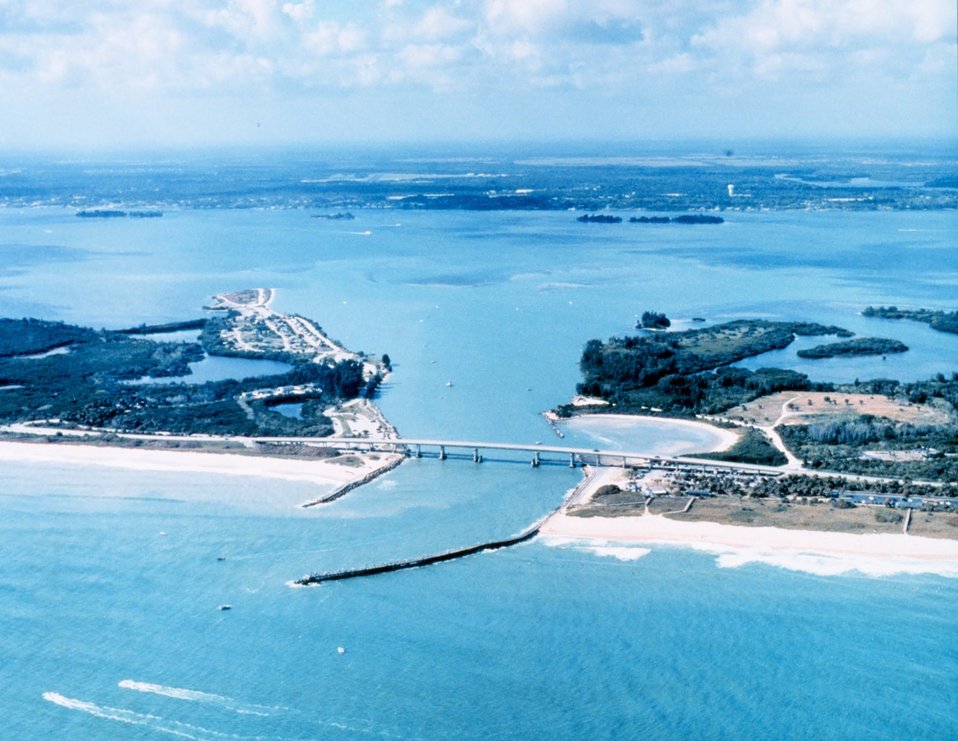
2749 North Latitude 8030 West Longitude.